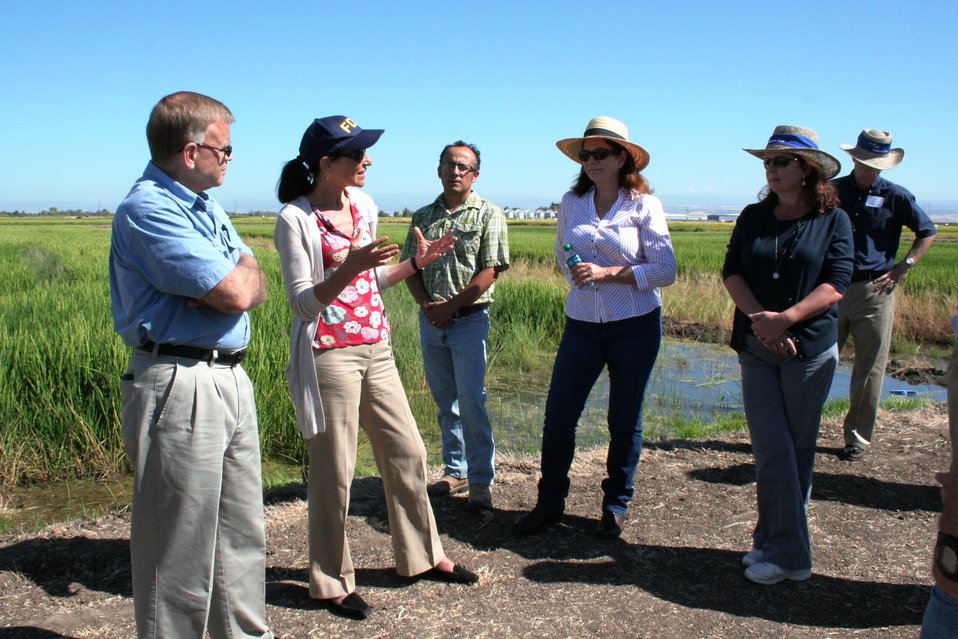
FDA's Rice Tour: Looking for Insights on Arsenic (0795)

FDA Commissioner Margaret A. Hamburg and colleagues visited research facilities and rice farms in California on Sept. 4-5, 2013 in an effort to gain a greater understanding of the presence of arsenic in rice. Here, Hamburg talks with researchers and rice industry experts at the Rice Experiment Station in Biggs, Calif. Listening at left is Deputy Commissioner for Foods and Veterinary Medicine Michael Taylor. For more information, read the FDA Voice blog:

• On Farms and in Labs, FDA and Partners Are Working to Get Answers on Arsenic in Rice